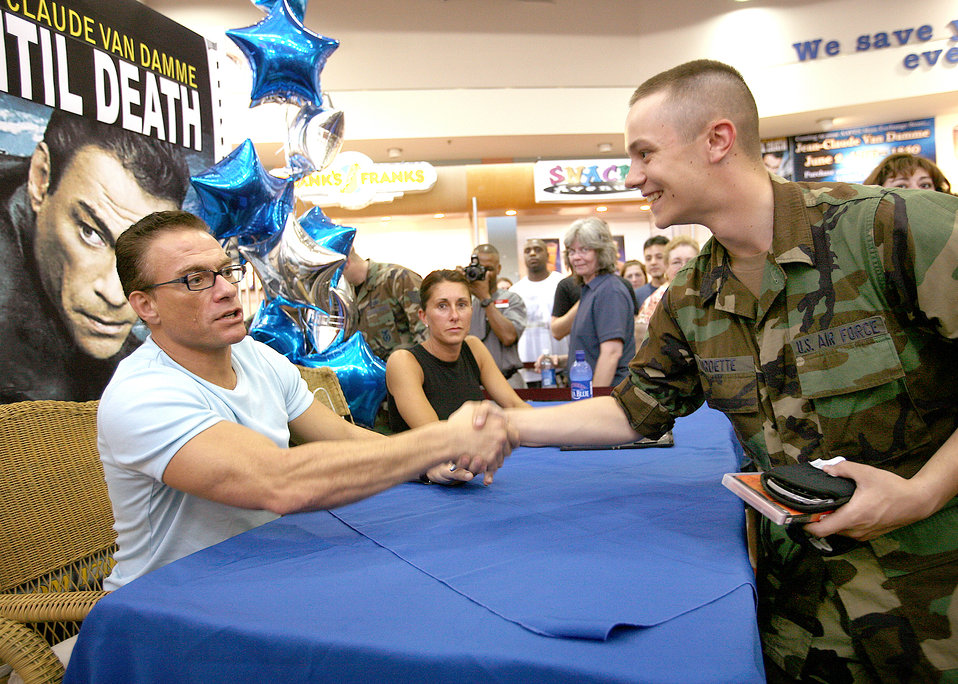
Strike a pose with Jean-Claude

Airman Basic Jeffery Birdette shakes hands with actor Jean-Claude Van Damme June 2 at the base exchange at Lackland Air Force Base, Texas. Airman Birdette, a security forces technical training student at Lackland AFB, had a DVD autographed by Mr. Van Damme as he went through the line.